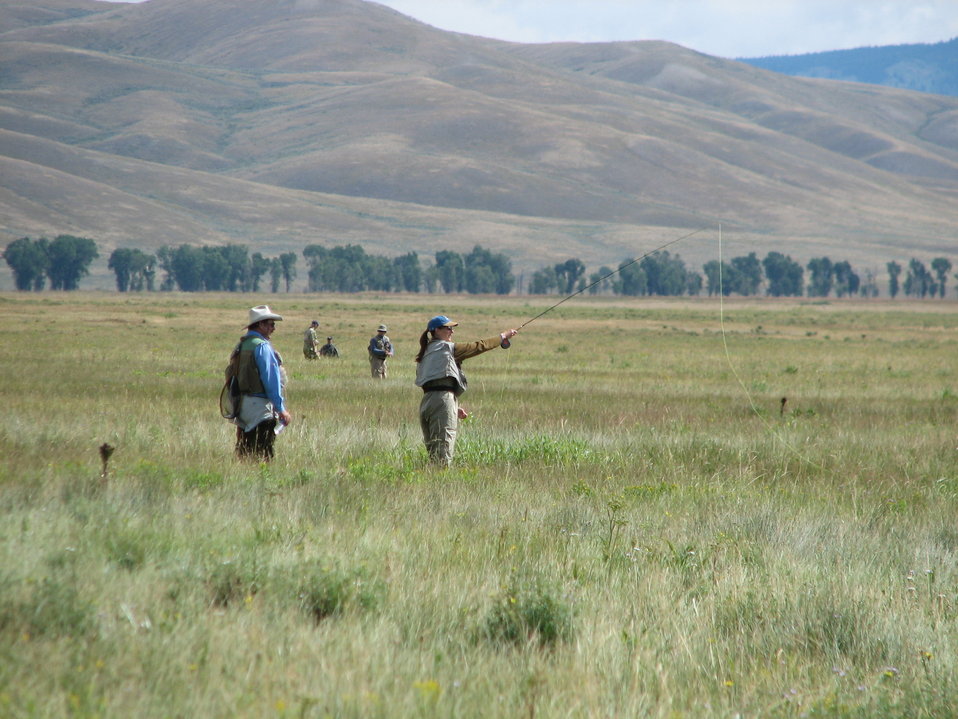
Flat Creek Anglers

National Elk Refuge waters support a wild population of Snake River cutthroat trout. Brook, brown, and rainbow trout are also present. Angling on the Refuge is allowed on both Flat Creek and Nowlin Creek.